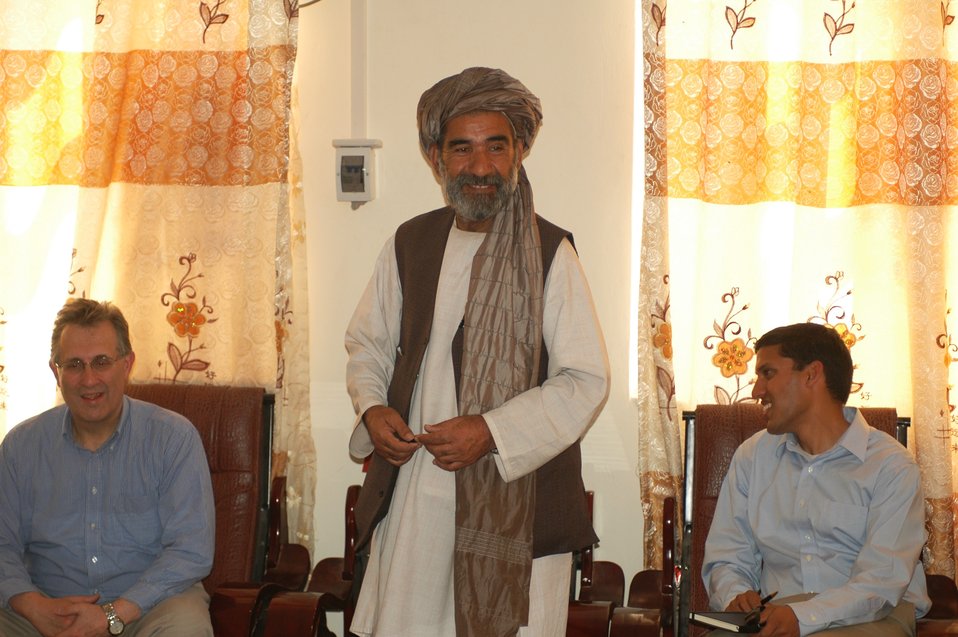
Dr Shah Visits Argandab April 10, 2010